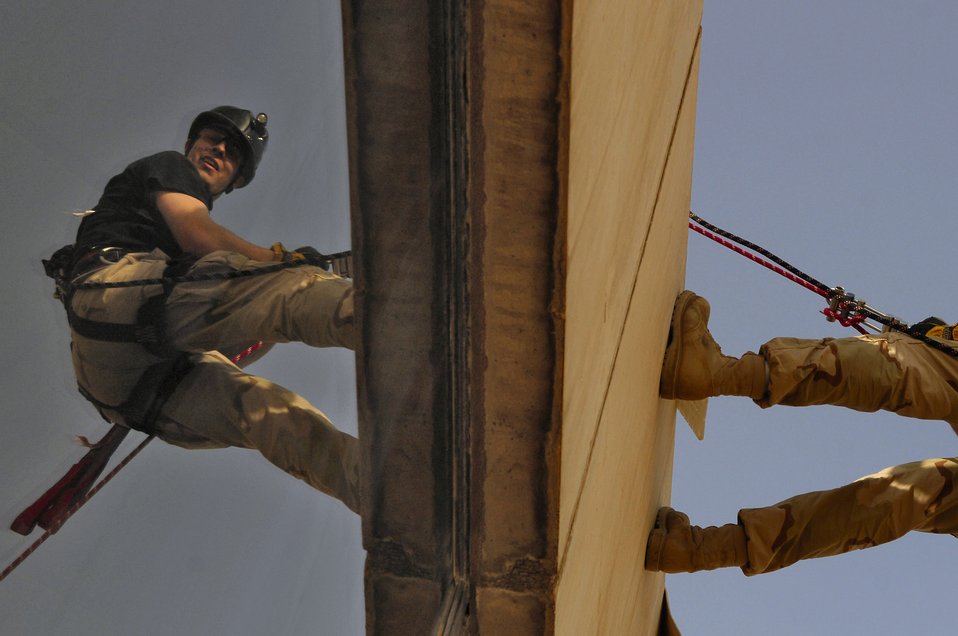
185 feet up in the air and only one way down

Staff Sgt. Grant Gimpel rappels from the roof of the Baghdad International Airport air traffic control tower during a training event March 3 at Sather Air Base, Iraq. The training is necessary in case controllers working in the 185-foot tower need to escape during an emergency. Sergeant Gimpel is a firefighter with the 447th Expeditionary Civil Engineer Squadron.